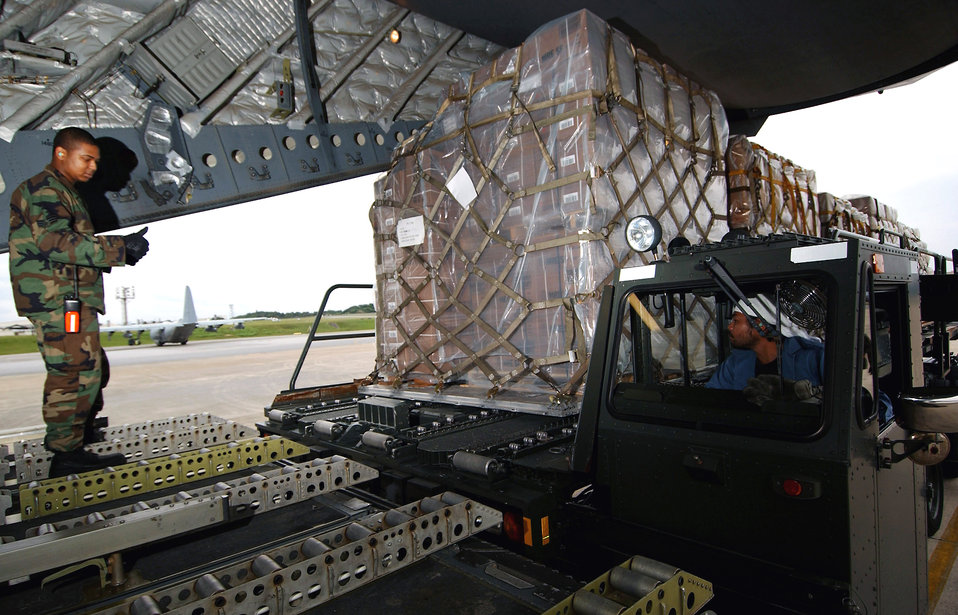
Airmen provide relief to China

Senior Airman William Judge guides cargo pallets onto a C-17 Globemaster III from Elmendorf Air Force Base, Alaska, Feb. 8 at Kadena Air Base, Okinawa. Members of the 733rd Air Mobility Squadron loaded medical supplies, food rations and cold weather gear onto this C-17 and another from Hickam Air Force Base, Hawaii, bound for China as part of a humanitarian relief effort. Airman Judge is an air transportation specialist.